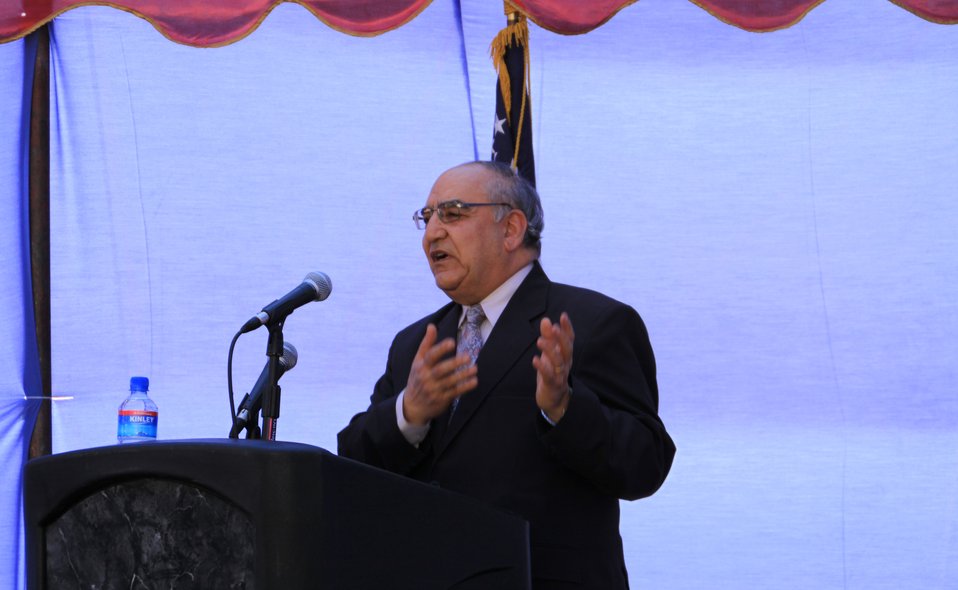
105 MW Tarakhil Power Plant Handover